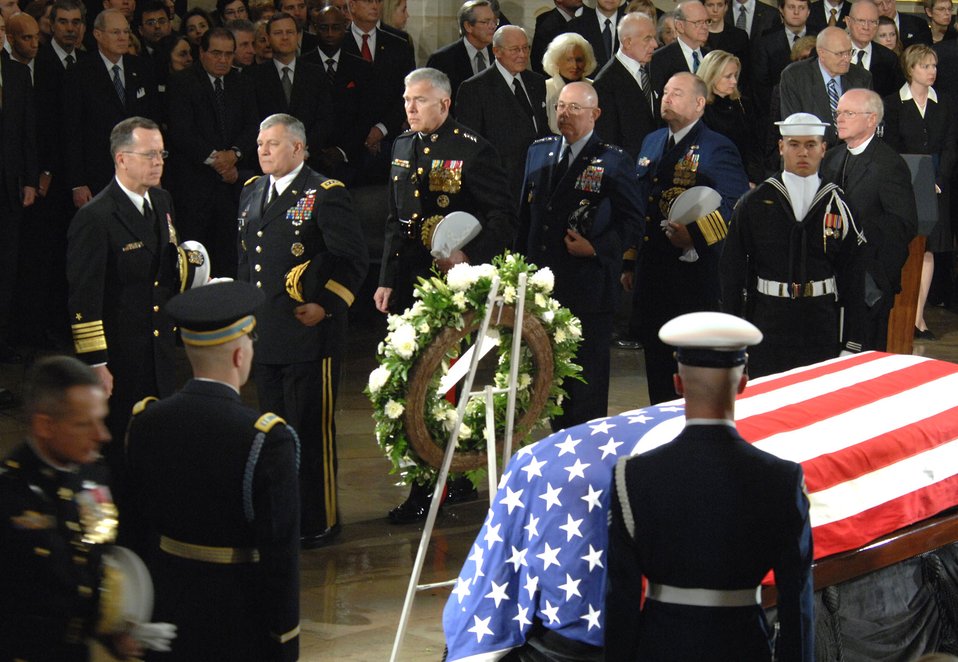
Cheney lauds Ford's service during ceremony

Senior military leaders depart the U.S. Capitol Rotunda Dec. 30 following memorial services for former President Gerald R. Ford.